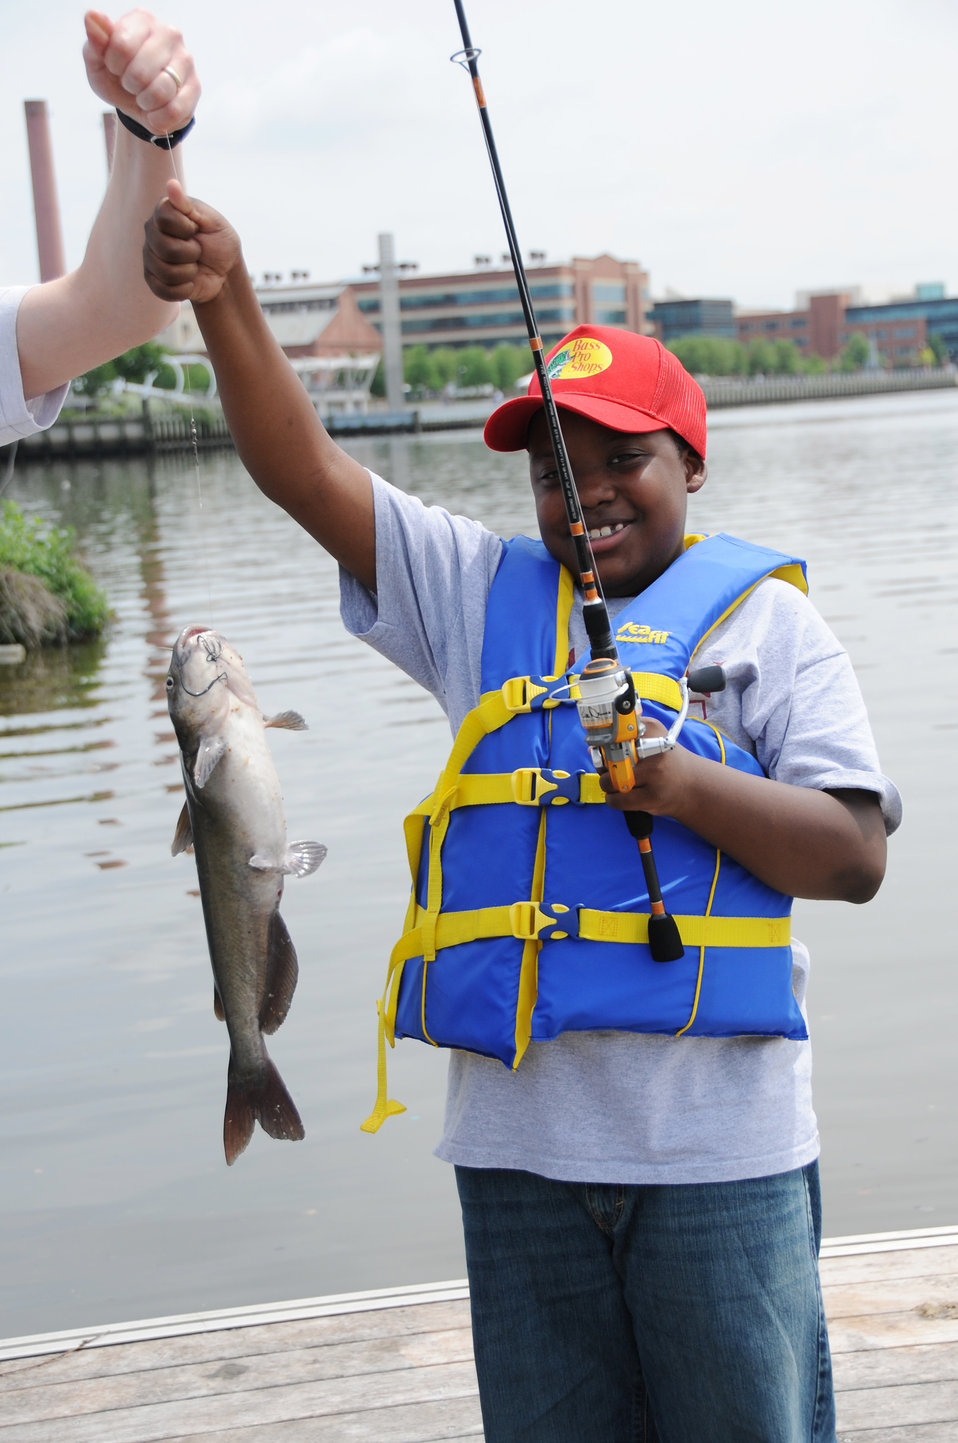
2013 National Fishing and Boating Week

Local students prepare to enjoy fishing at the annual kick-off of National Fishing and Boating Week on the Anacostia River in Washington D.C.